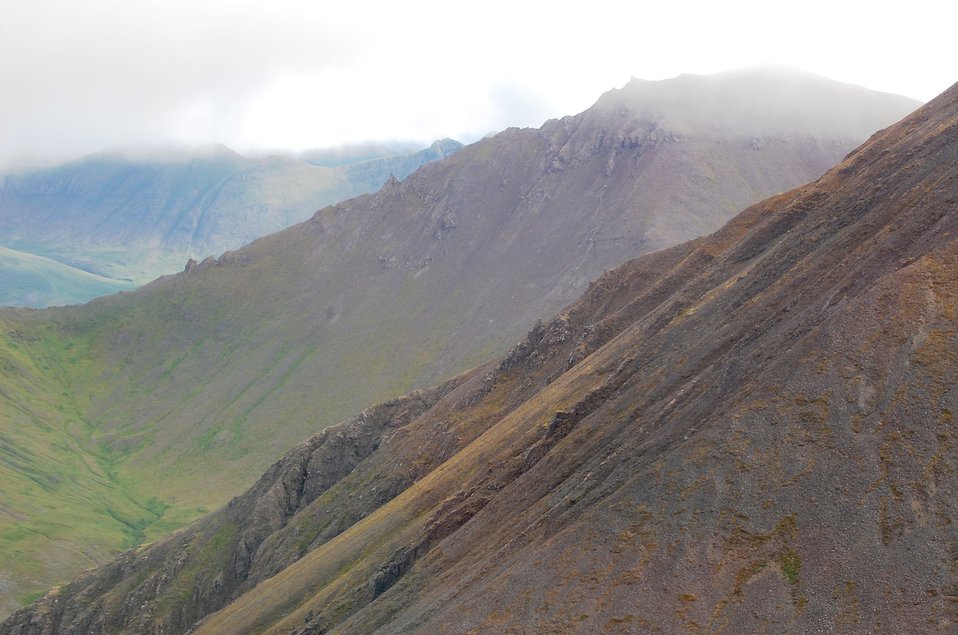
Aleutian Range

Izembek National Wildlife Refuge